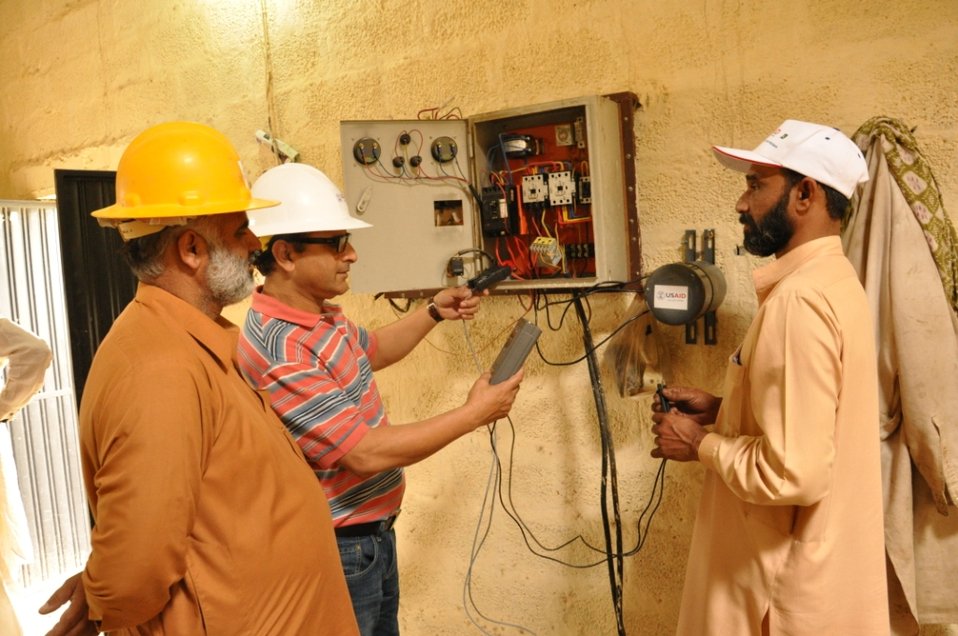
Usaid To Provide Technical Assistance To Improve Efficiency Of Tube-Wells In Iesco By Installing 2600 Lt Capacitors at Islamabad on April 26, 2012